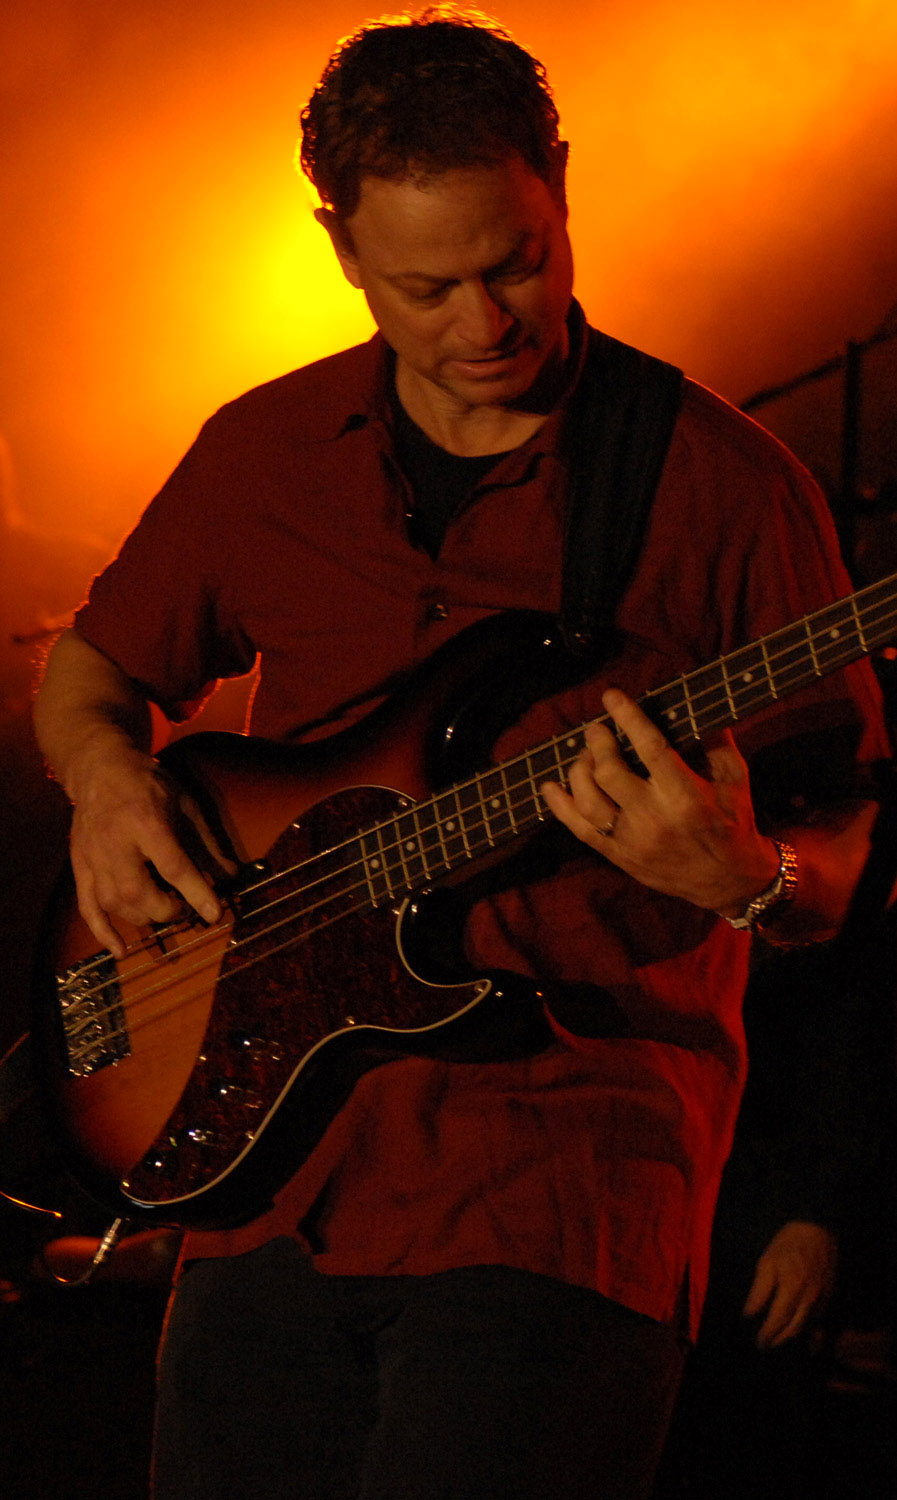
Lt. Dan Band salutes servicemembers overseas

Gary Sinise jams on his guitar as the Lt. Dan Band performs May 15 at Spangdahlem Air Base, Germany. The performance here wrapped up the band's 2007 European tour. They played five United Service Organization, or USO, shows throughout Belgium and Germany.